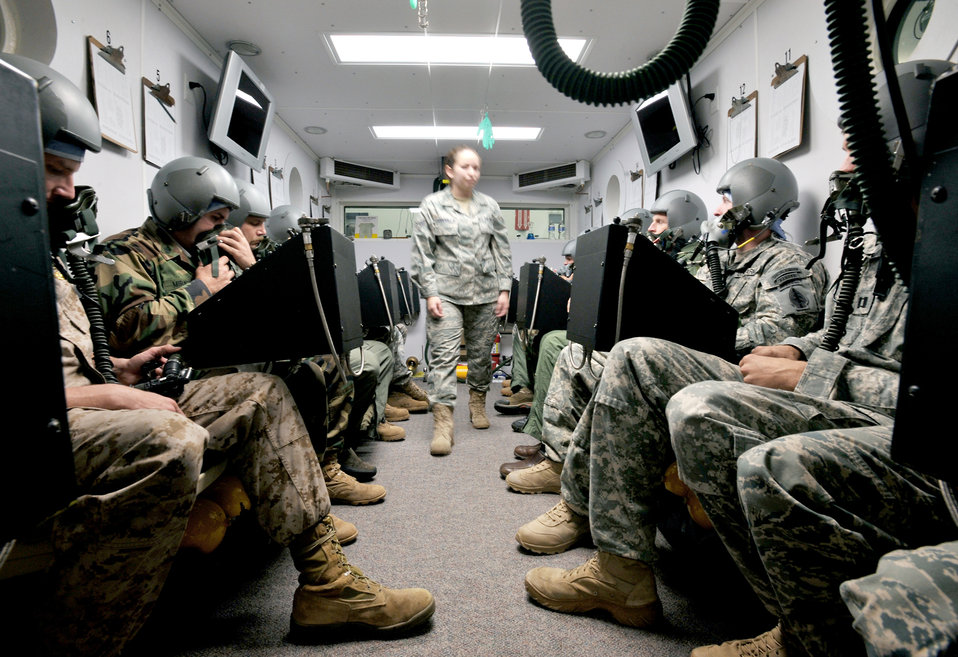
High Altitude Parachute Class PB

Senior Airman Jeylyn Capdevilla lectures students about the physical effects of the high altitude chamber Nov. 2, 2010, at the aerospace physiology building at Shaw Air Force Base, S.C. The high altitude parachute class focuses on human performance at high altitudes and high stress levels. Students take this class before freefall school and as a refresher course every five years. Airman Capdevilla is an aerospace and operational physiologist technician with the 20th Aerospace Medicine Squadron.